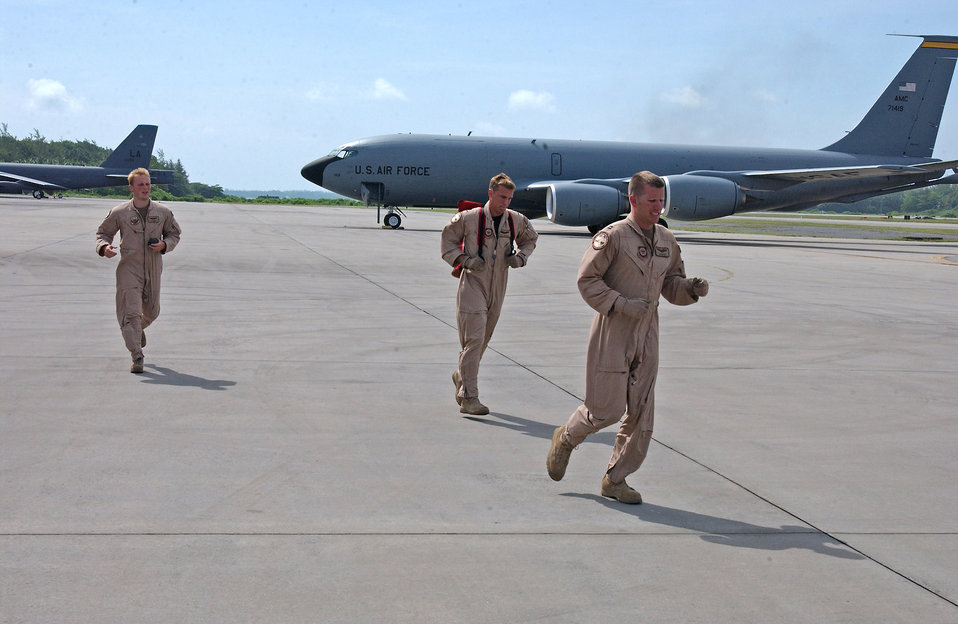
The flow behind the mission

A KC-135 Stratotanker aircrew scrambles from their jet following an in-flight emergency. The KC-135s refuel B-52 Stratofortresses that provide close air support for troops on the ground in Afghanistan.